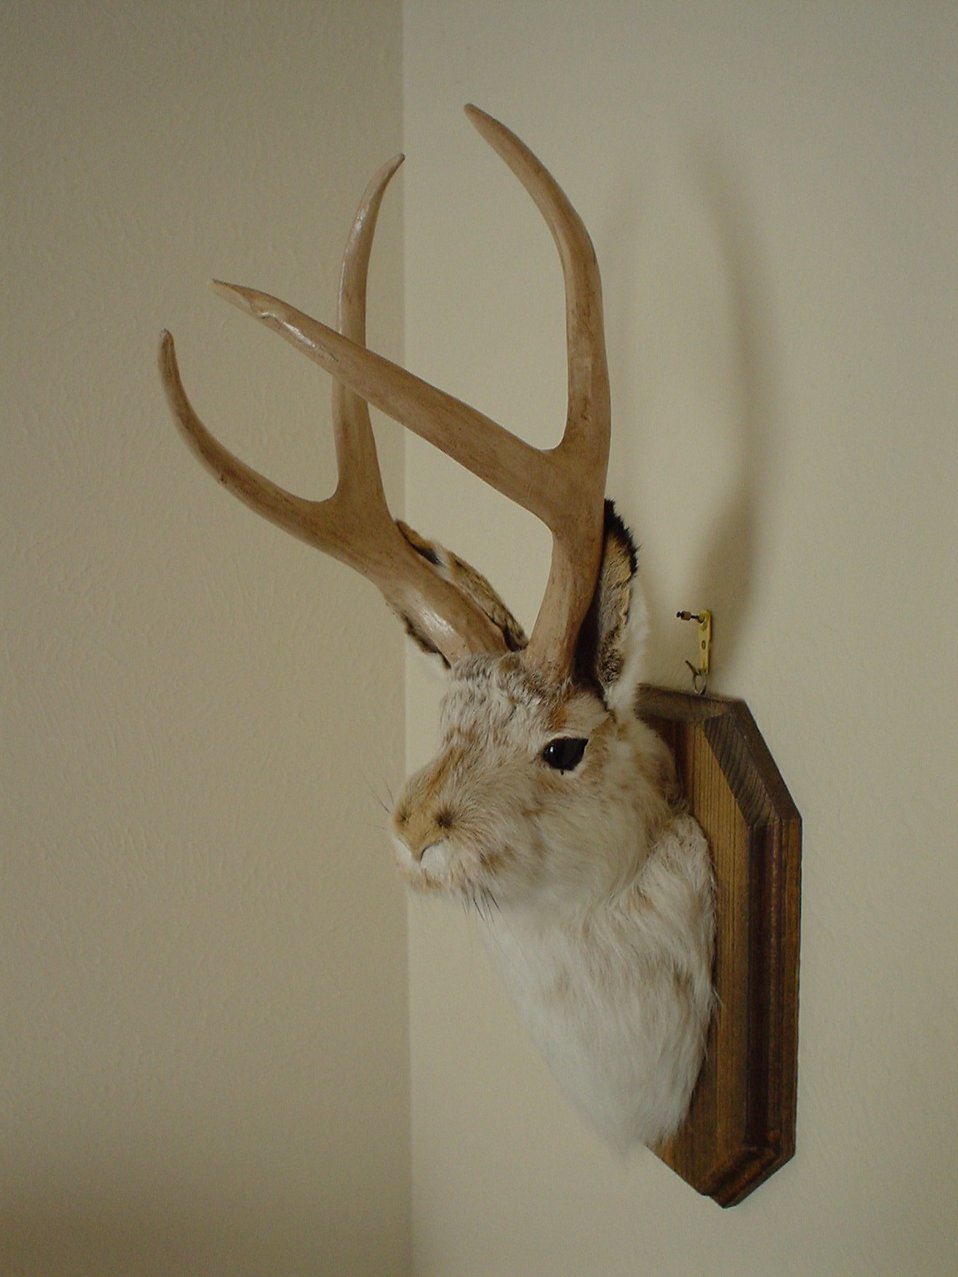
Jackalope